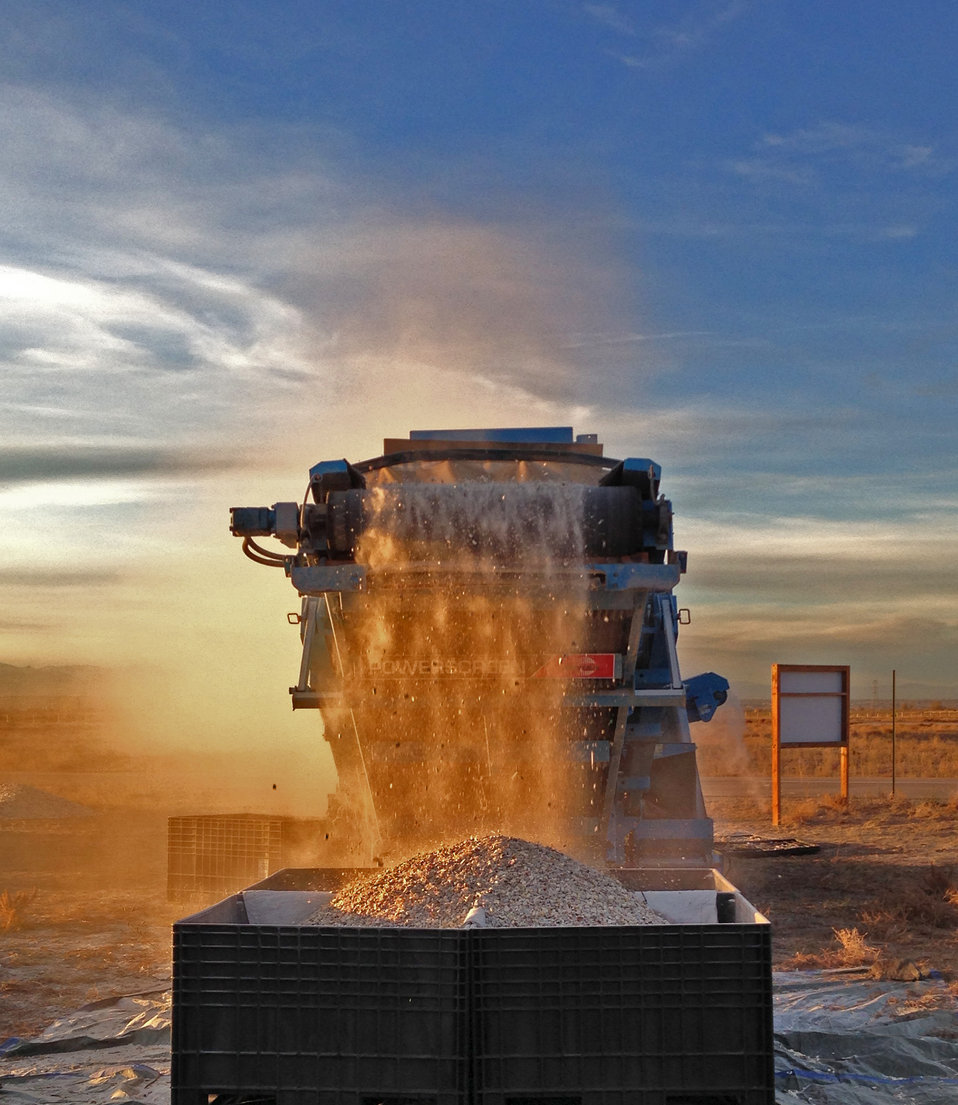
Crushing continued until dusk